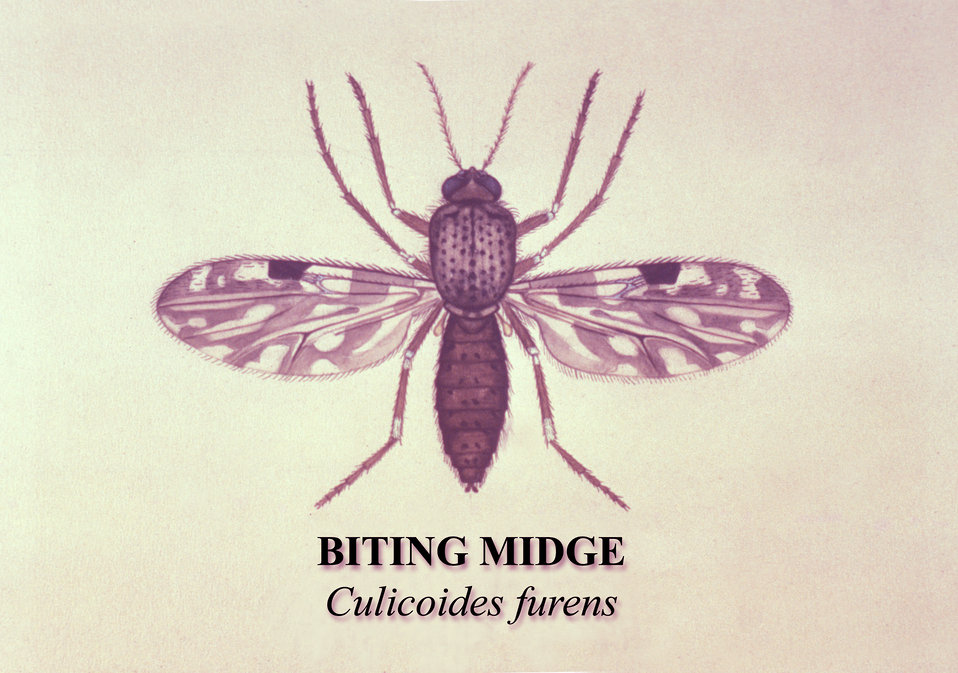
This is an illustration of a sand fly, or the 'biting midge', Culicoides furens.